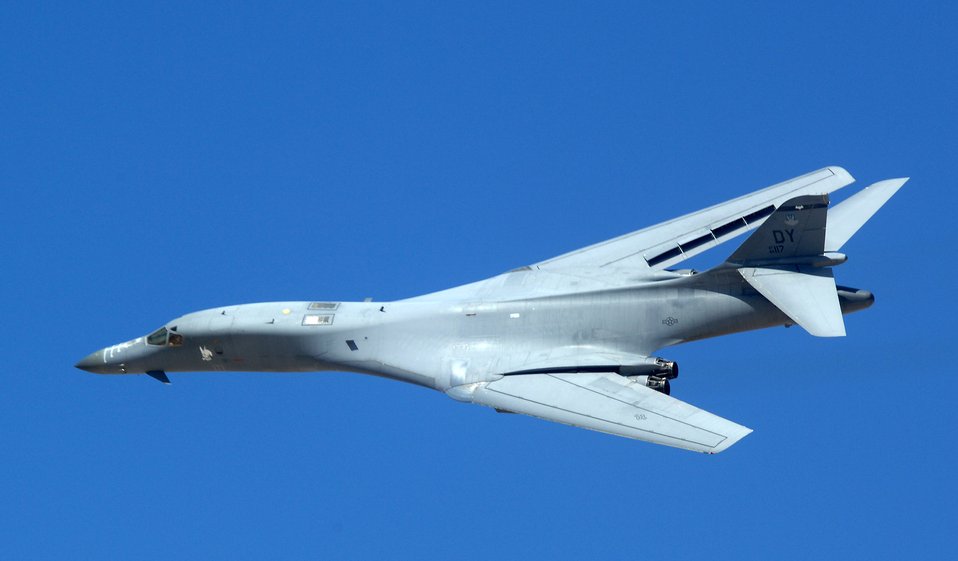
A Lancer pours it on

A B-1 Lancer from the 7th Bomb Wing at Dyess Air Force Base, Tex., makes a high speed pass Sept. 14 during a fire power demonstration at the Nevada Test and Training Range. The demonstration gave spectators a close-up and realistic view into the Air Force's ability to perform its wartime mission.